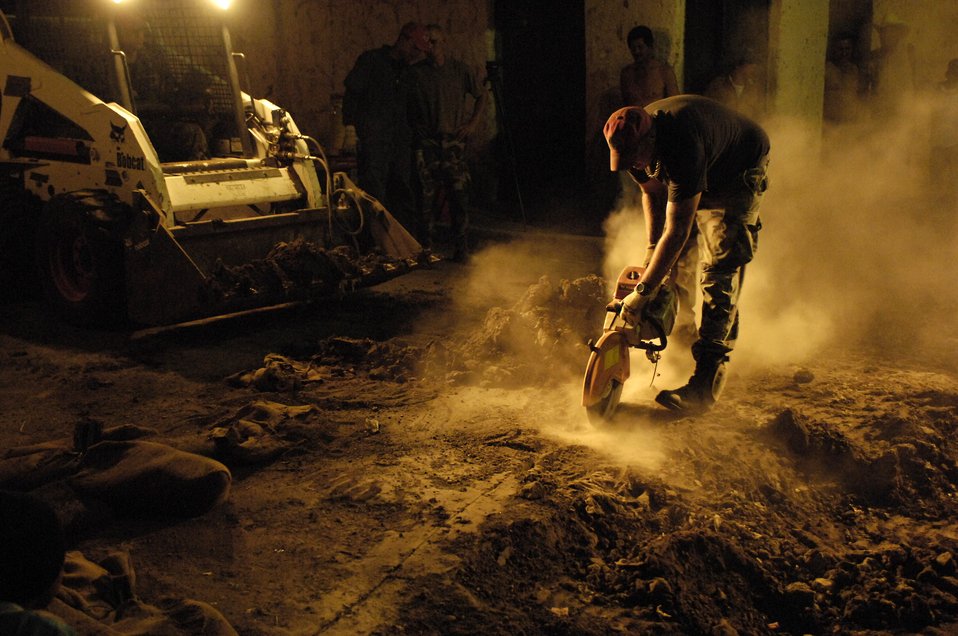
New Horizons-Nicaragua 2007

Staff Sgt. Brian Vaden cuts through the surface of an old road March 2 in Santa Teresa, Nicaragua, in preparation to replace the roadway. The effort was part of New Horizons-Nicaragua 2007, a $7.25 million joint U.S. and Nicaraguan military humanitarian and training exercise, providing a new school and medical clinic, as well as free health and veterinary care, giving aid and strengthening bonds between the two nations. Sergeant Vaden is deployed with 820th Expeditionary Red Horse Squadron.